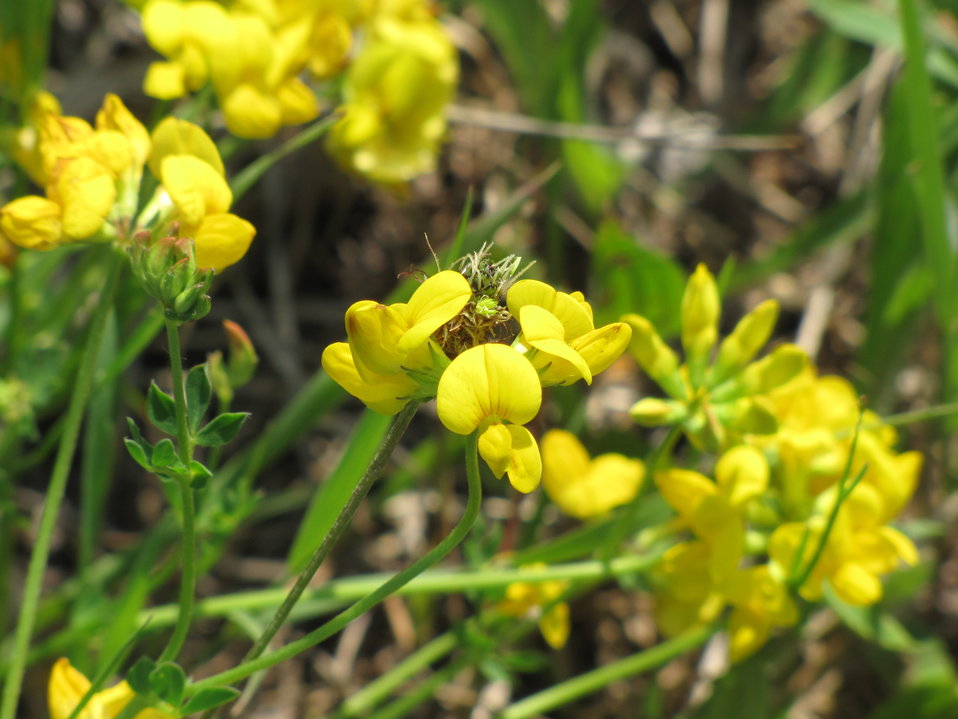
Birdsfoot Trefoil used to be only found in farm fields as a crop brought over from Europe, but it can now be found along roads, like the Marshland Wildlife Drive, due to vehicles unknowingly transporting seeds. Birdsfoot Trefoil has the potential to become a disasterous invasive plant because it chokes out sunlight and spreads quickly. Luckily, the plant at Seney has not taken over yet.